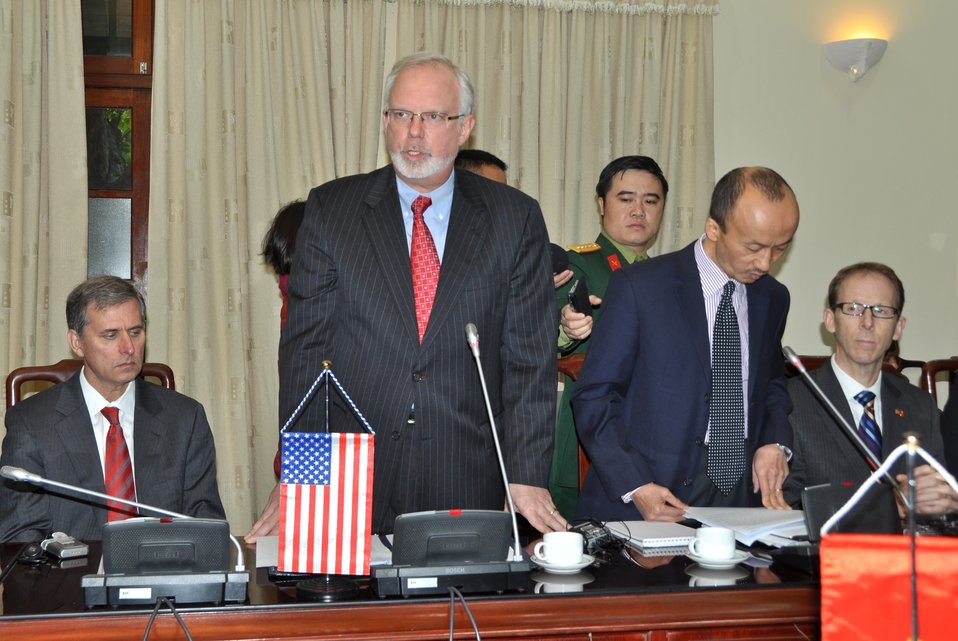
U.S. Embassador to Vietnam David Shear speaks at the MoU signing ceremony.

Hanoi, December 16, 2013.